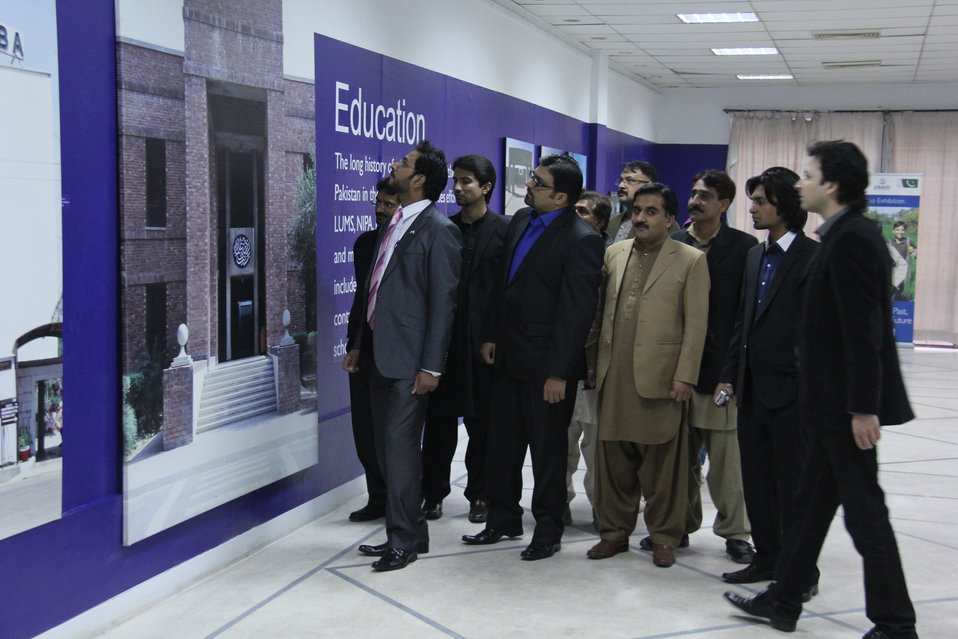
Pakistanis and Americans are working together in the fields of energy, education, economic growth, community development, and health.